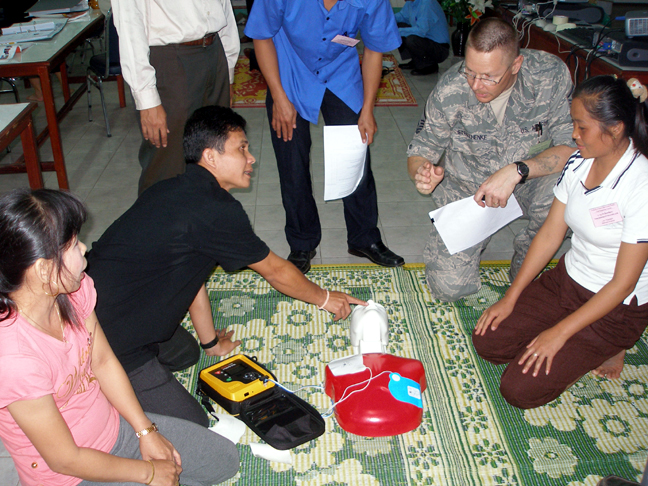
PACAF IHS teaches tecniques to Laos team

Master Sgt. John Strothenke is teaching fundamentals of a U.S. based emergency medical systems to Laotian Dr. Vilaphone Thoudsanikone and Nang Phoukham a nurse from local Hospital 103 in Vientiane, Laos, July 7. This first responder course is being taught to fit the needs of their country and build capability in Laos. Sergeant Strothenke is an international health specialist from Eielson Air Force Base, Alaska.